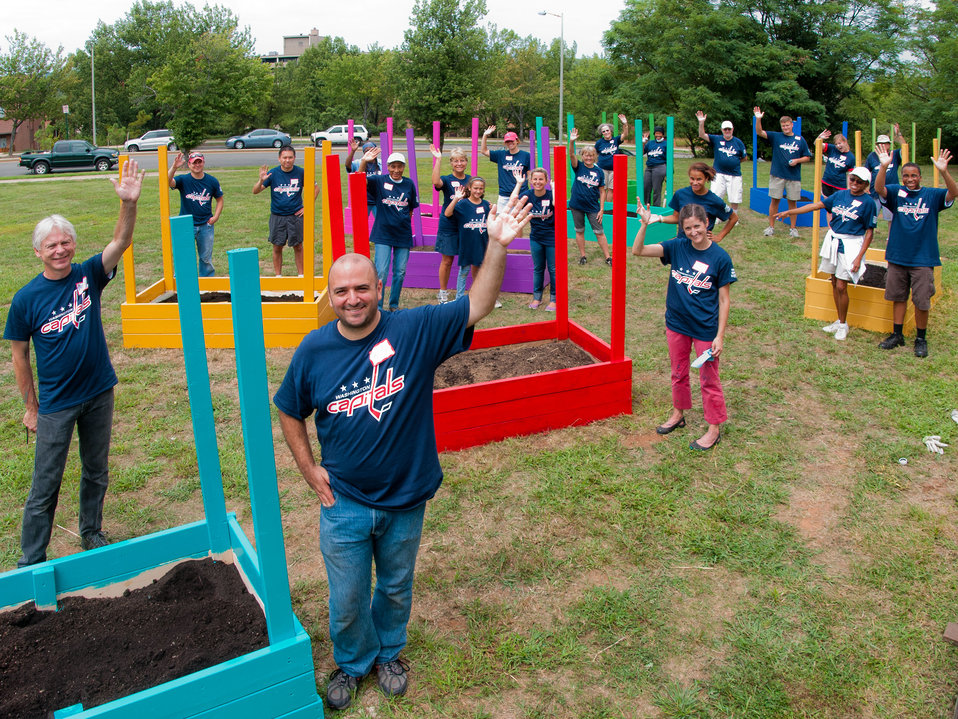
U.S. Department of Agriculture (USDA) People’s Garden Executive Master Gardeners, friends, and family, along with Washington Capitals fans are volunteering in District of Columbia Public Schools’ (DCPS) Beautification Day, on Saturday, August 25, 2012, at Thurgood Marshall Elementary School, in Washington, D.C. Each year people are invited to help “spruce up” public school facilities in preparation for the first day of school. More than 70 volunteers pitched in at this large school facility. The People’s Garden effort involves building and painting raised planter boxes, then preparing the soil mixture so they are “ready to grow.” Additionally, a team that includes descendants of U.S. Supreme Court Justice Thurgood Marshall assembles a prefabricated garden toolshed. The Justice’s son, John Marshall leads the team, which includes Brianna the Justice’s great-grand daughter in one of many multi-generational efforts at this school today. Washington Capitals Forward Mike Riberio, his family and mascot Slapshot participated in every project underway at Marshall School. From the outside gardens, to inside mural painting, and robotics worktable construction, the teams made their goals.